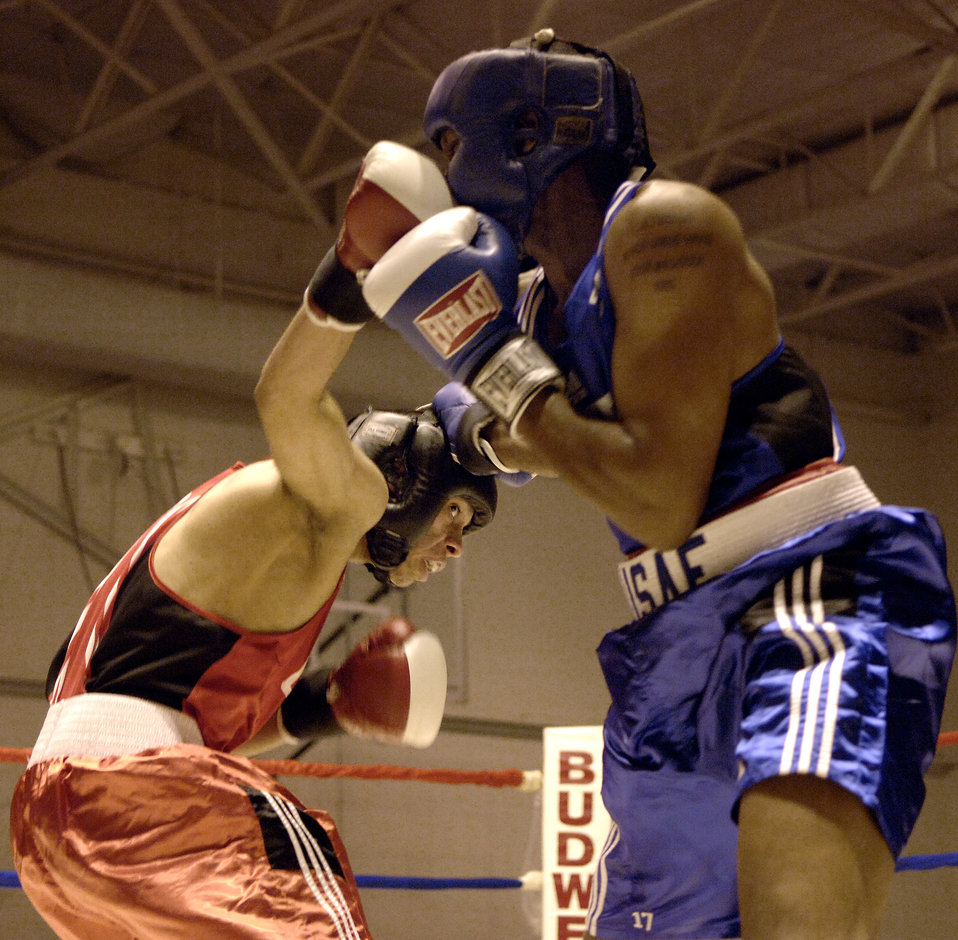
Boxing for the team

SAN ANTONIO (AFPN) -- Hector Ramos connects with an over-the-top hook to Kevin Leggett in the second round of their match Jan. 20. Ramos is from Travis Air Force Base, Calif., and Leggett is from Homestead Air Reserve Base, Fla. Ramos will represent the Air Force at the Armed Forces Boxing Tournament at Fort Huachuca, Ariz., Feb. 6 to 11.